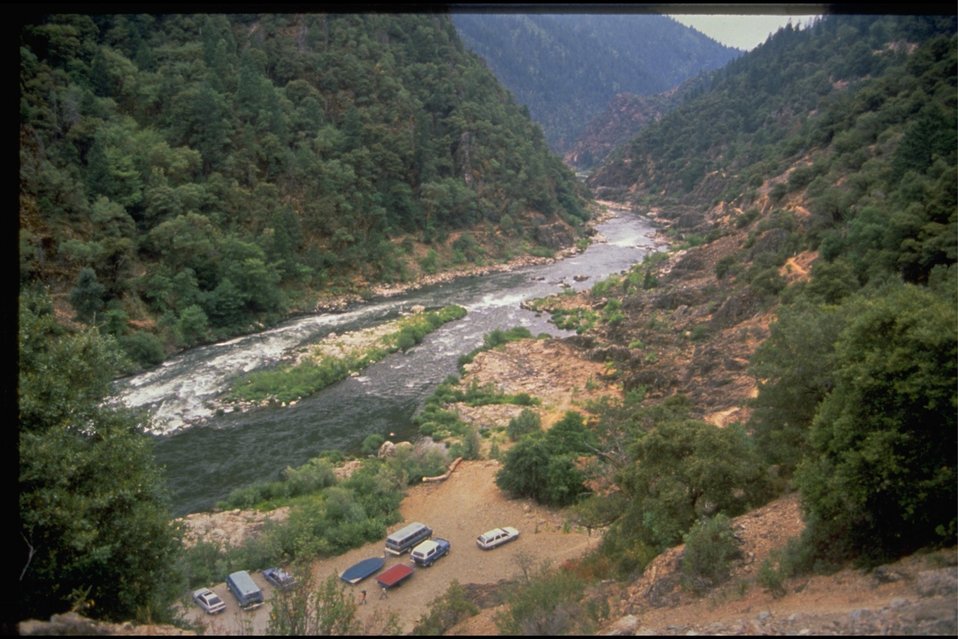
Grave Creek boat ramp and rapids